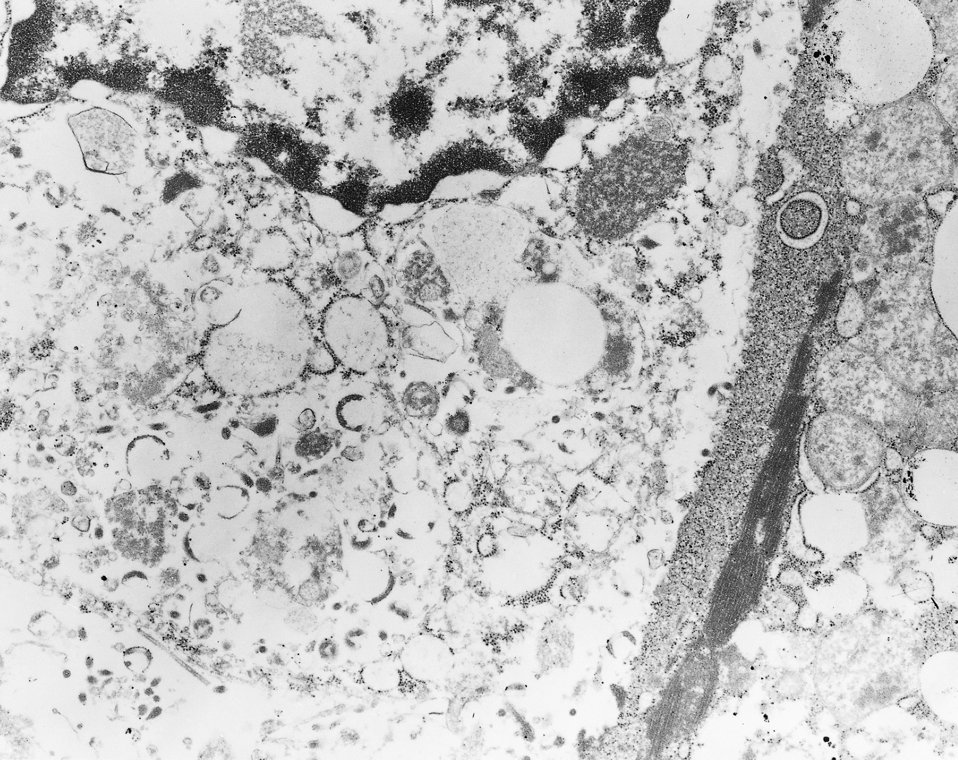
Electronmicrograph shows a thin section containing the Ebola virus, the causative agent for African Hemorrhagic Fever.